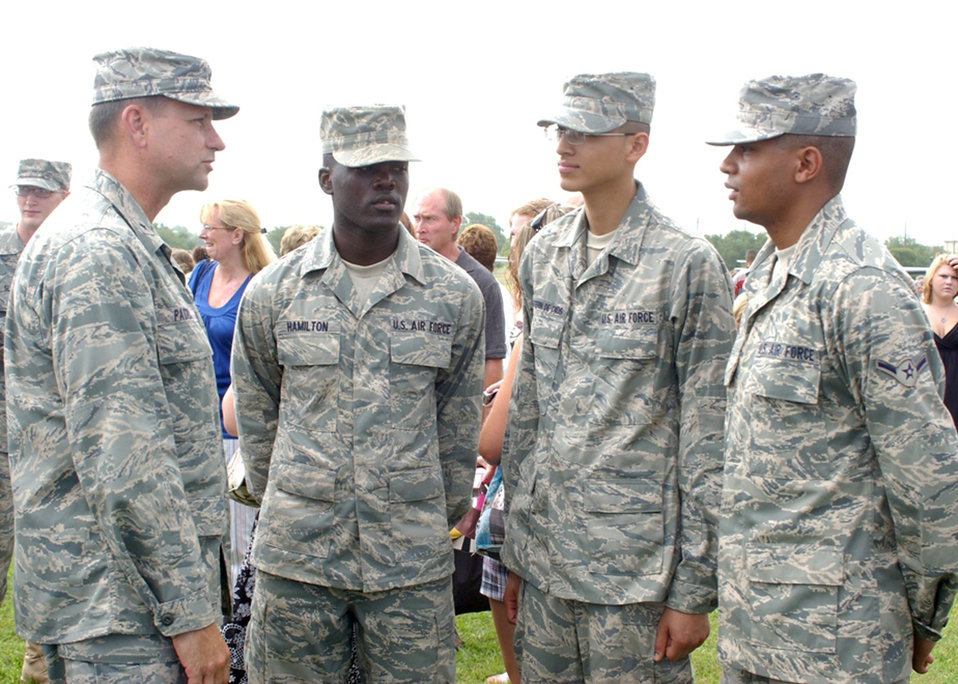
Armed Forces Integration Day

Brig. Gen. Len Patrick, 37th Training Wing commander, speaks with airmen after they graduated during a Basic Military Training graduation ceremony July 25 at Lackland Air Force Base, Texas.